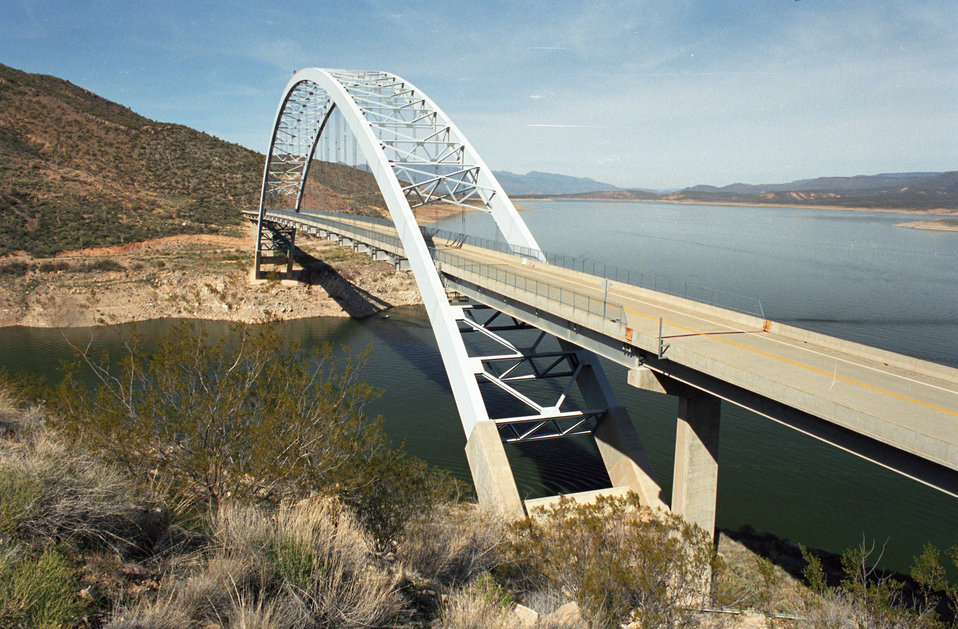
Roosevelt Lake Bridge over Theodore Roosevelt Lake in Tonto National Forest near Tucson, AZ on January 24, 2012. The Roosevelt Lake Bridge carries state route 188 over Roosevelt Lake in Gila County was completed in September 1990.